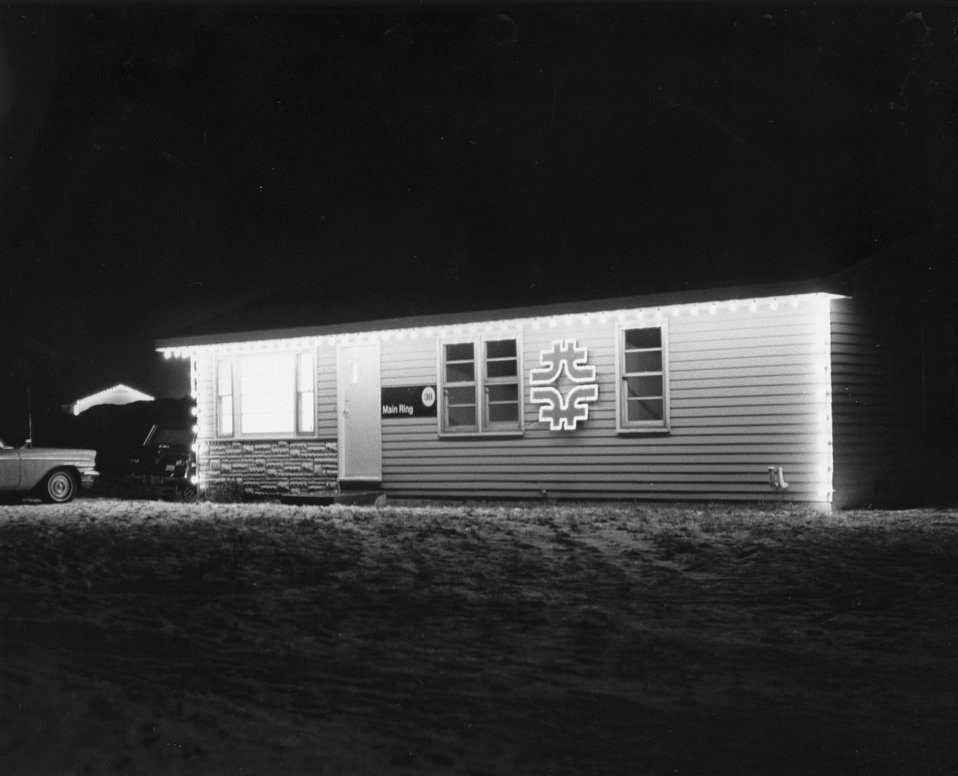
A typical house at NAL Village where scientists and their support staffs are located. 1968